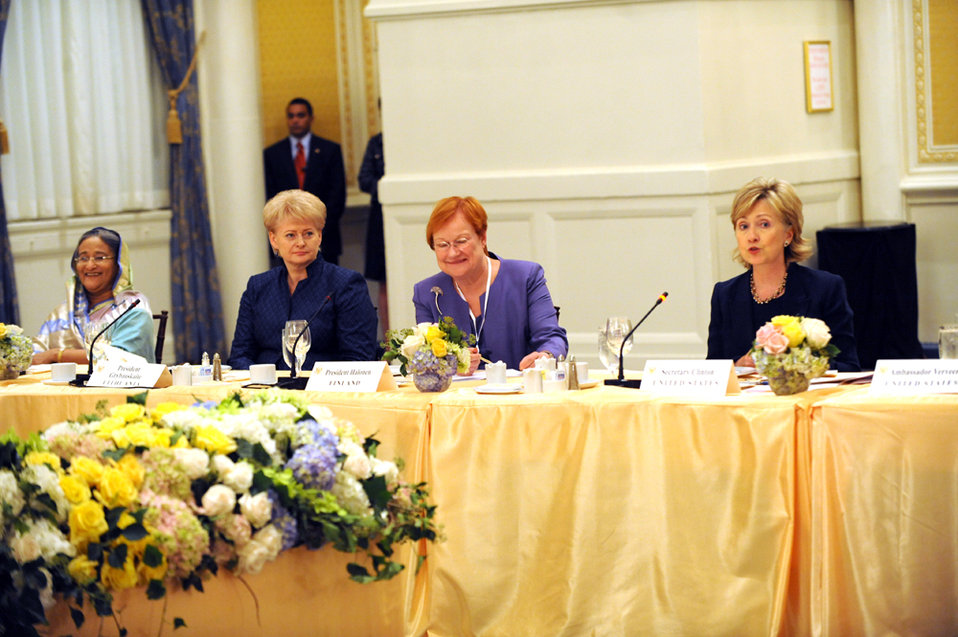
UNGA 2009: Secretary Clinton Holds Women Heads of State and Foreign Ministers Luncheon

U.S. Secretary of State Hillary Rodham Clinton participates in a lunch with women Heads of State and Foreign Minsters at the Waldorf Astoria hotel during the 64th Session of the UN General Assembly in New York City, New York September 24, 2009.